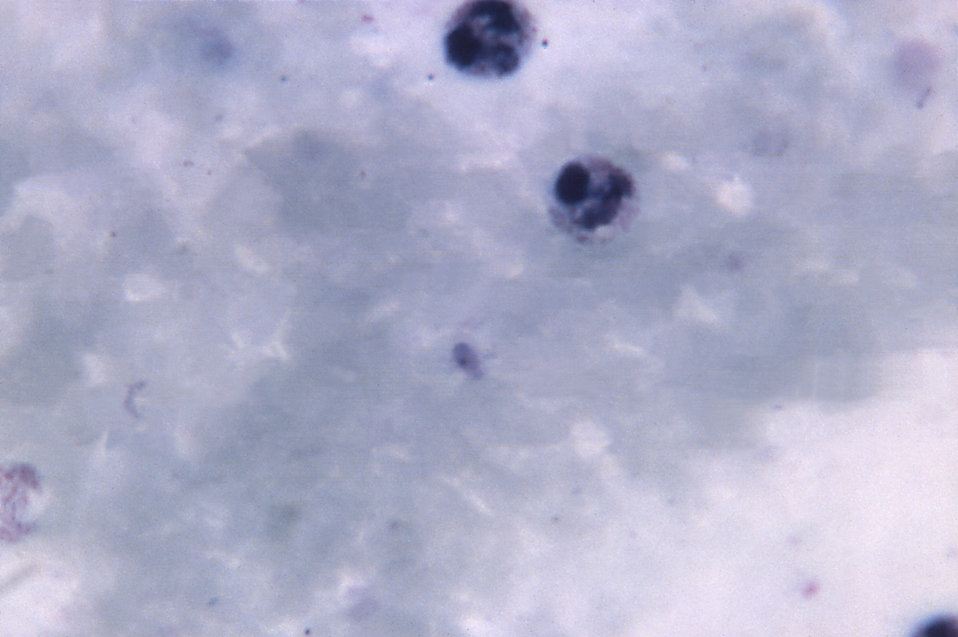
This thick film micrograph reveals an artifact, produced by a rounded cold spore that resembles a parasite; Mag. 1125X.